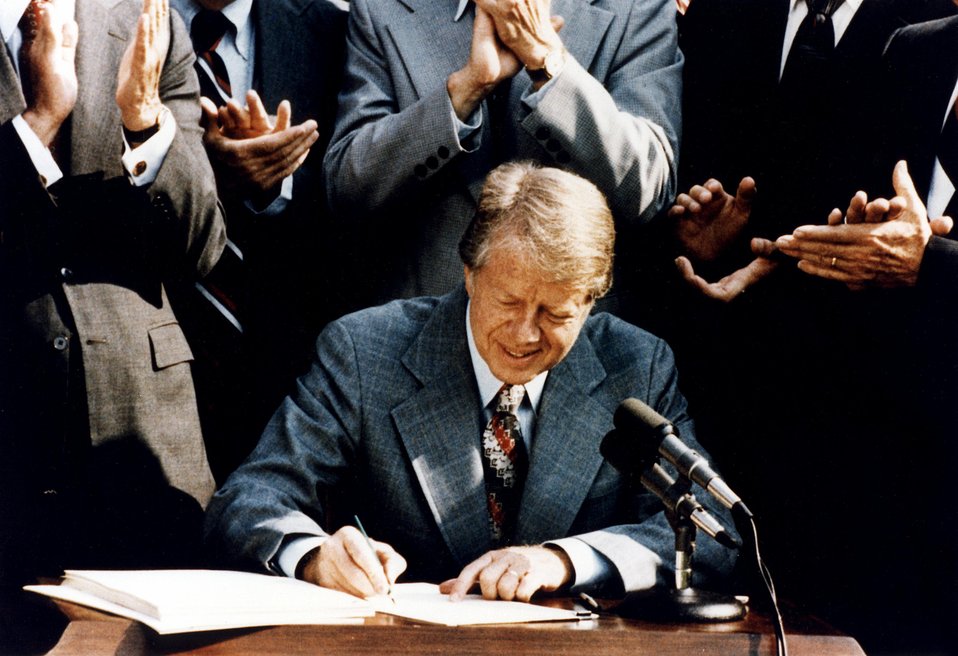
In a Rose Garden ceremony, President Jimmy Carter signed the Department of Energy Organization Act into law on August 4, 1977.